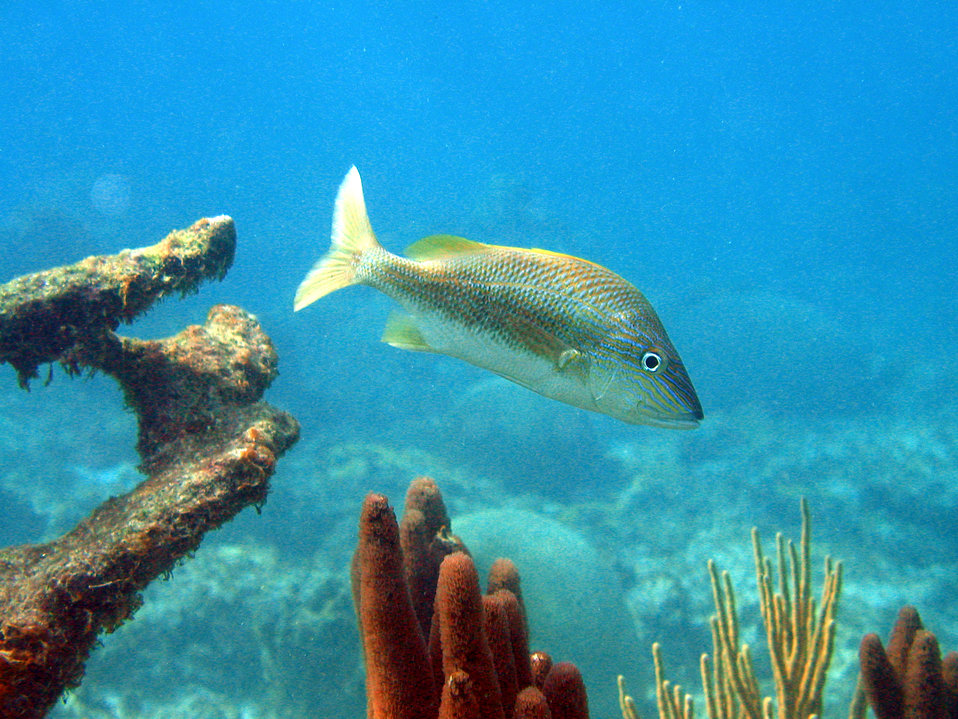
White grunt (Haemulon plumierii)